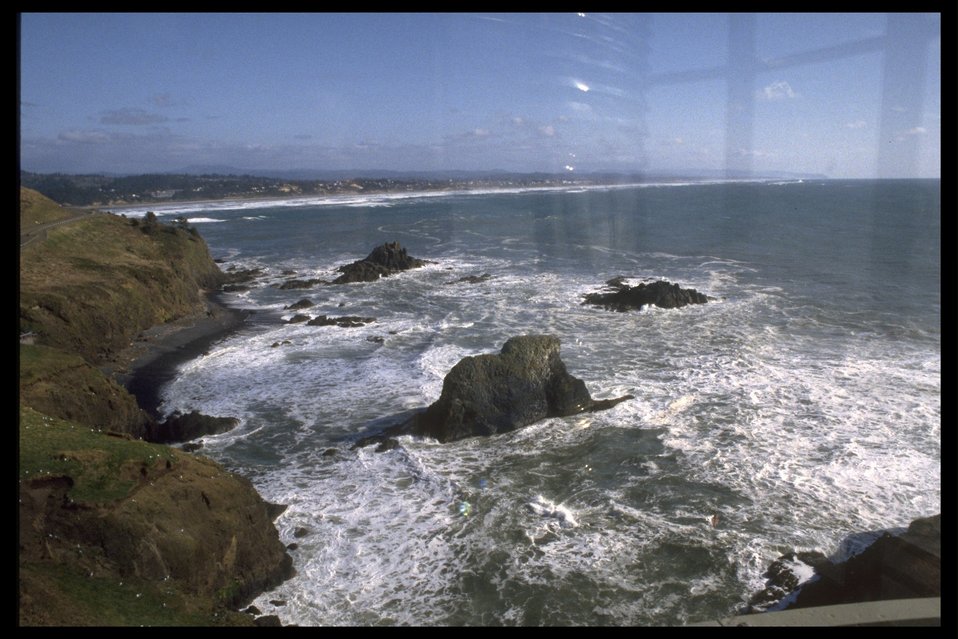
View of the coast and Pacific Ocean from Yaquina Head Lighthouse.